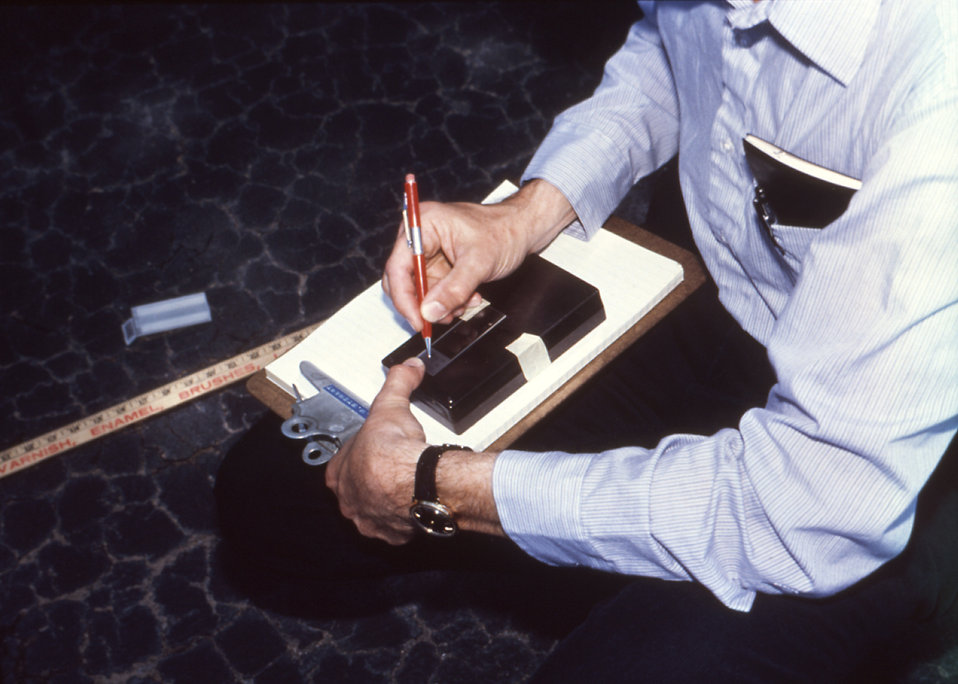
Using a pencil, this 1981 photograph depicted a field technician marking the frosted end of a fresh glass microscope slide, while carrying a clipboard as he collected data during an arbovirus vector field study.